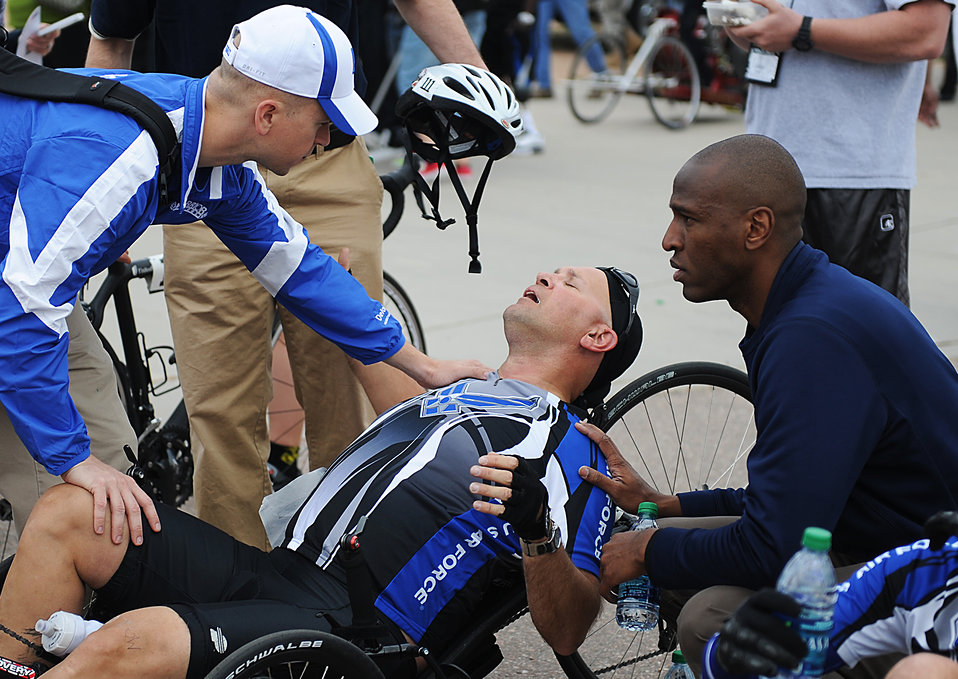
Warrior Games

U.S. Air Force Chief Master Sgt. Damian Orslene, center, catches his breath after taking part in the recumbent cycling event of Warrior Games 2012 at the U.S. Air Force Academy in Colorado Springs, Colo., May 1, 2012.